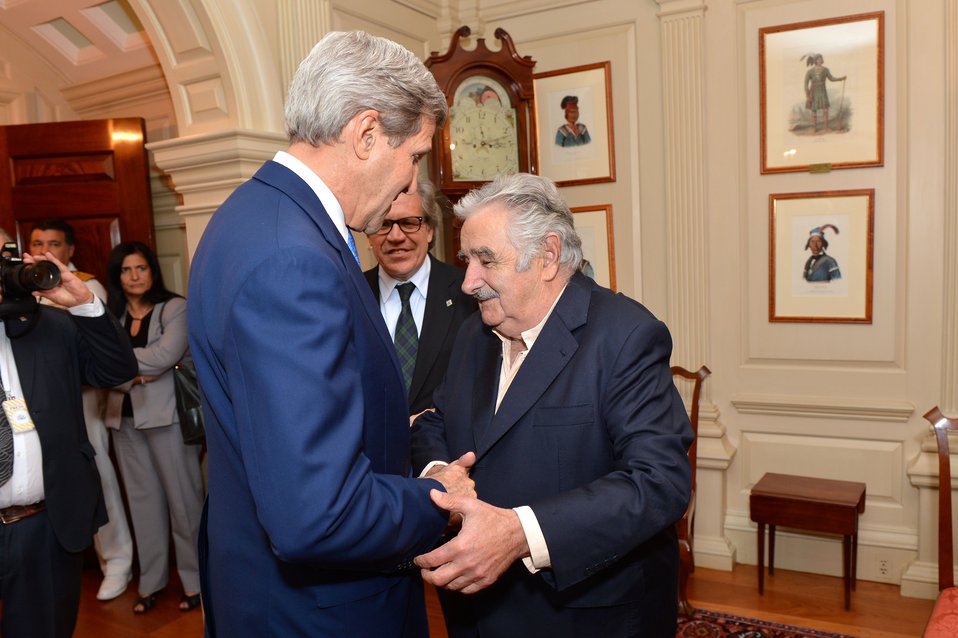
Secretary Kerry Greets Uruguayan President Mujica

U.S. Secretary of State John Kerry greets Uruguayan President Jose Mujica before their bilateral meeting at the U.S. Department of State in Washington, D.C., on May 13, 2014.